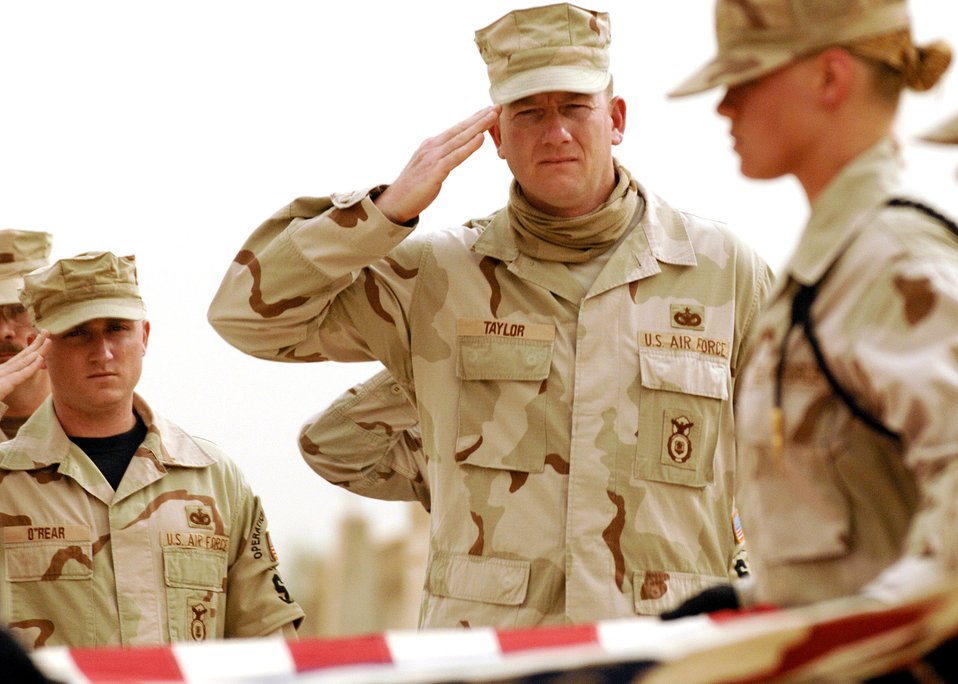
Honoring a fallen Airman

Tech. Sgt Clinton Taylor, 407th Expeditionary Security Forces Squadron, salutes as members of the 407th Expeditionary Group honor guard team fold the flag during a fallen Airmen ceremony May 28 in remembrance of Staff Sgt. John Self at Ali Air Base, Iraq. Sergeant Taylor gave the final roll call during the ceremony honoring the life of Sergeant Self, a security forces member assigned to the 732nd Expeditionary Security Forces Squadron at Camp Bucca, Iraq, was killed May 14 by an improvised explosive device while on patrol.